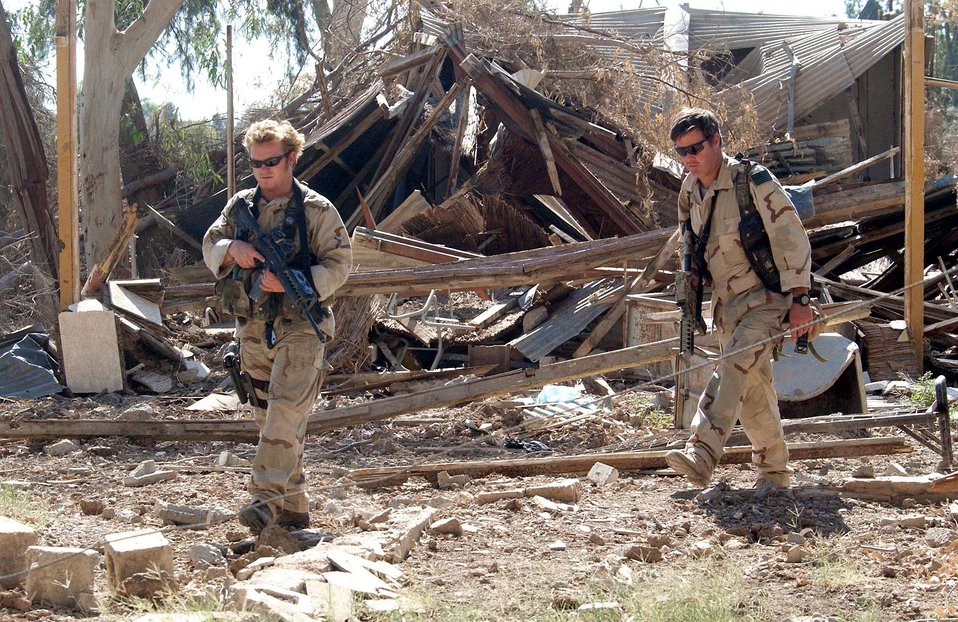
Combat controllers key in war on terror

BAGHDAD INTERNATIONAL AIRPORT, Iraq -- Two combat controllers inspect a building for a weapons cache.